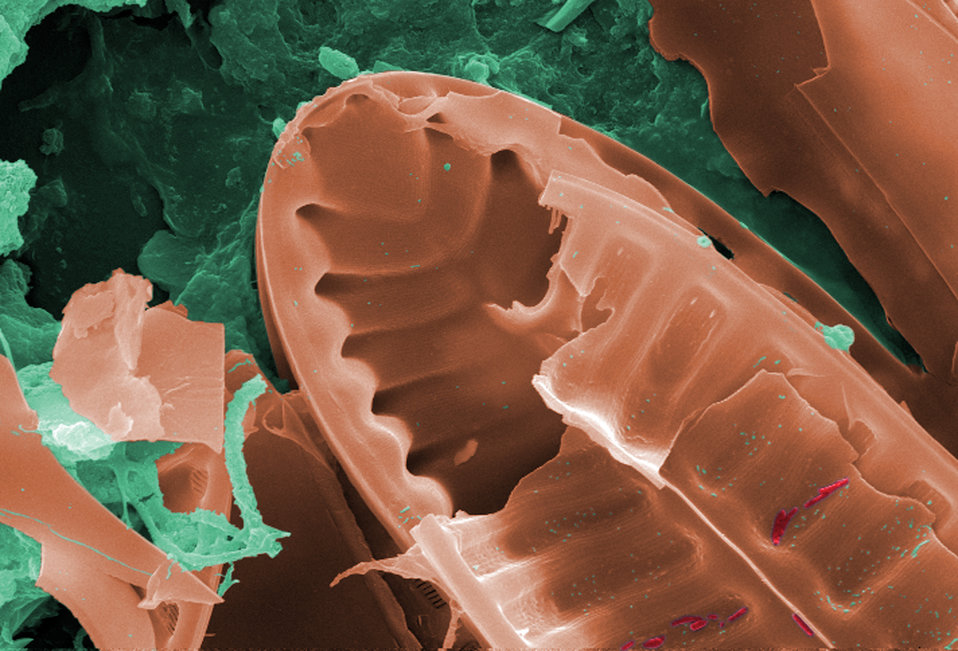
This digitally-colorized scanning electron micrograph (SEM) of an untreated water specimen extracted from a wild stream mainly used to control flooding during inclement weather, revealed the presence of unidentified organisms, which included bacteria, protozoa, and algae. In this particular view, it appears that a diatom had been fractured in the processing of this specimen. Surrounding this diatomic microorganism, was a large biofilm mass within, and around which were numerous protozoan amoeboid and bacterial microorganisms.